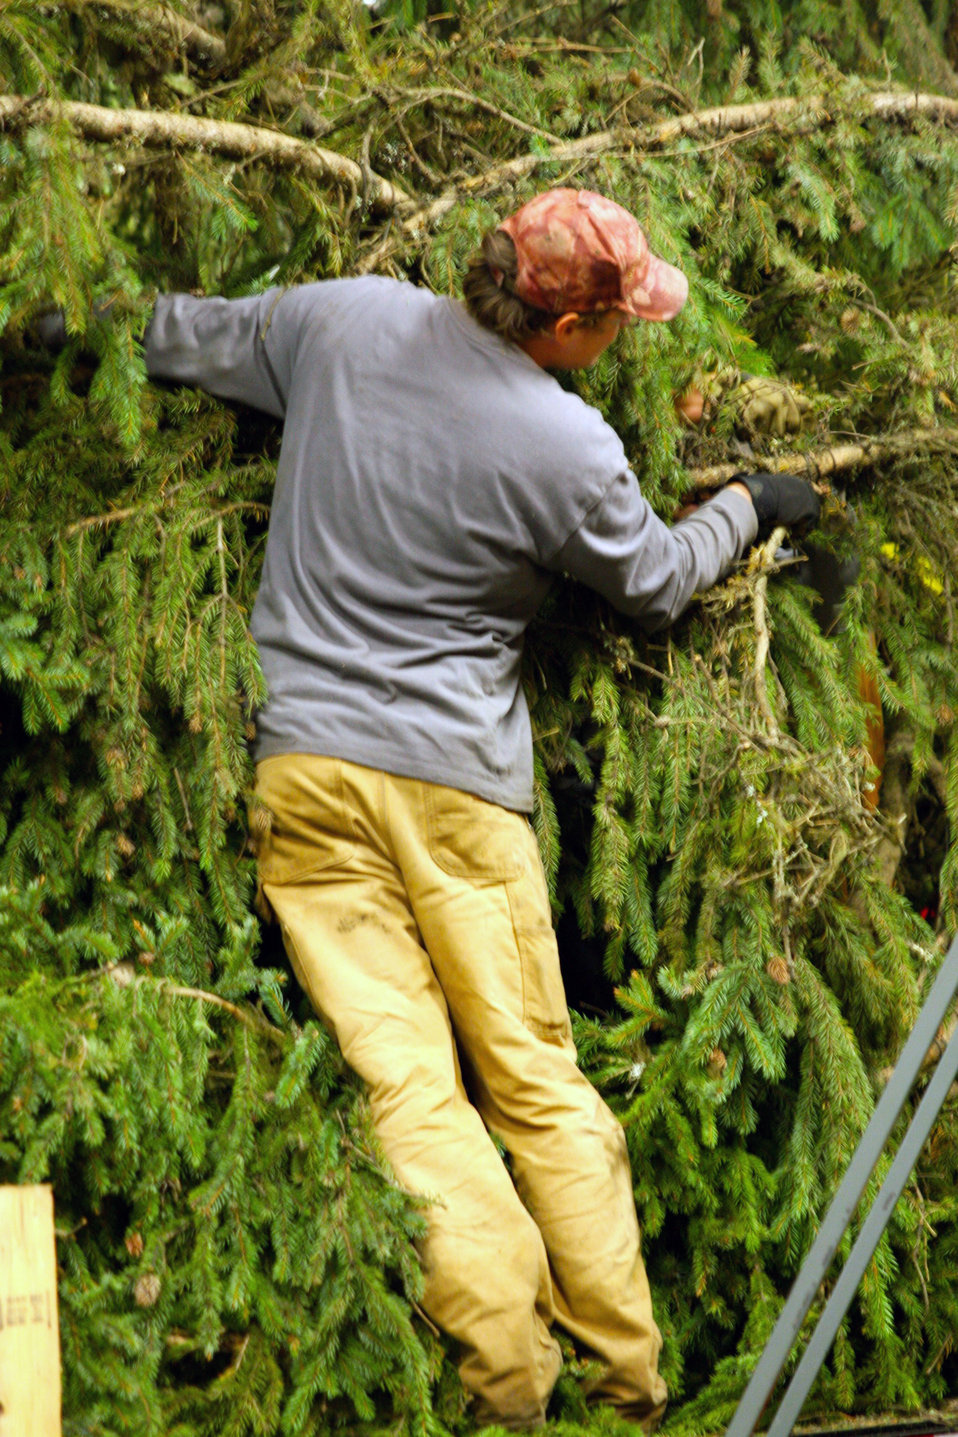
Colville National Forest personnel prepare the official 2013 Capitol Christmas Tree for transport on Nov. 3, 2013. The Capitol Christmas tree is an 88-foot tall Engelmann spruce that was harvested at Colville National Forest in Washington on Nov. 1, 2013.